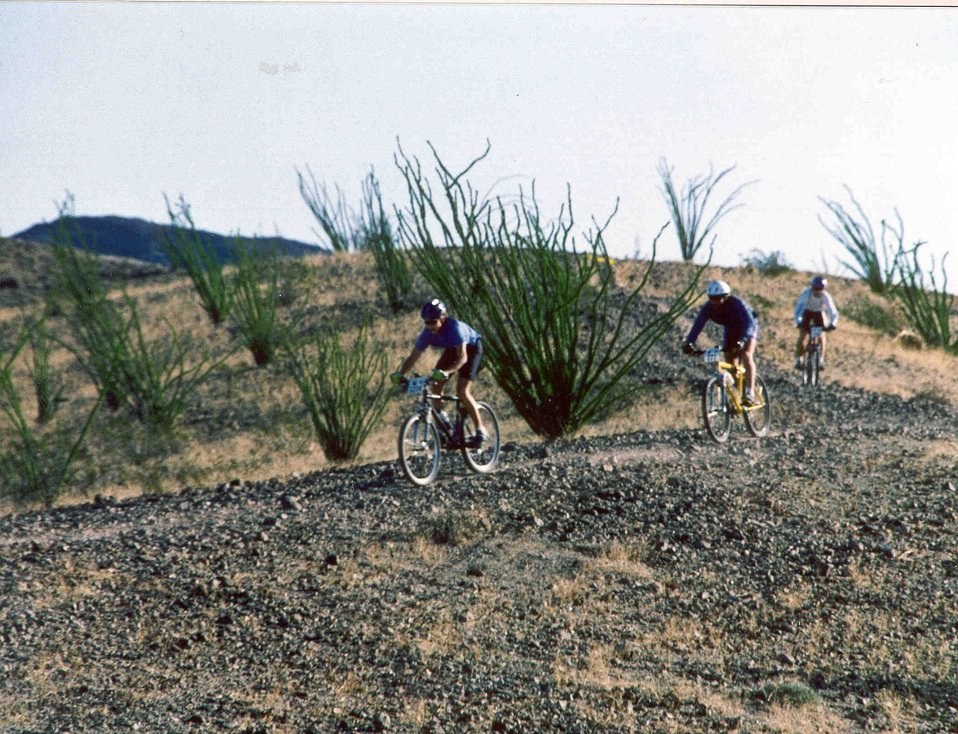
Mountain bikers racing in the desert